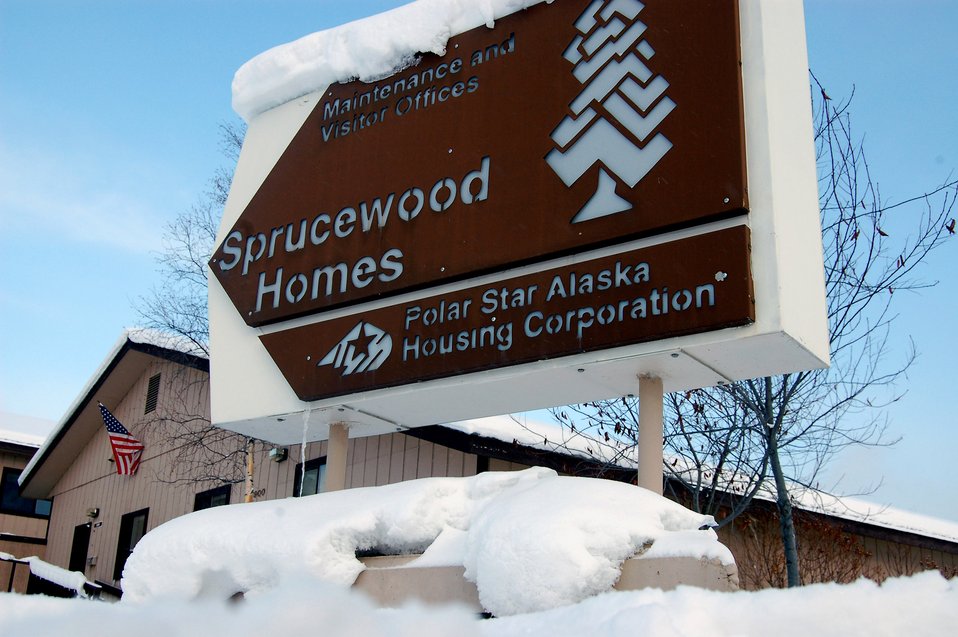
Eielson helps Airmen move into new homes in a hurry

The old housing sign at Sprucewood Homes sits covered in snow outside the old maintenance and visitors office Feb. 27 at Eielson Air Force Base, Alaska. Three hundred Air Force families had to be moved out of the privatized housing into new housing from September to December. The reason for the move was due to a conclusion of a privatized housing contract that wasn't able to be renegotiated.